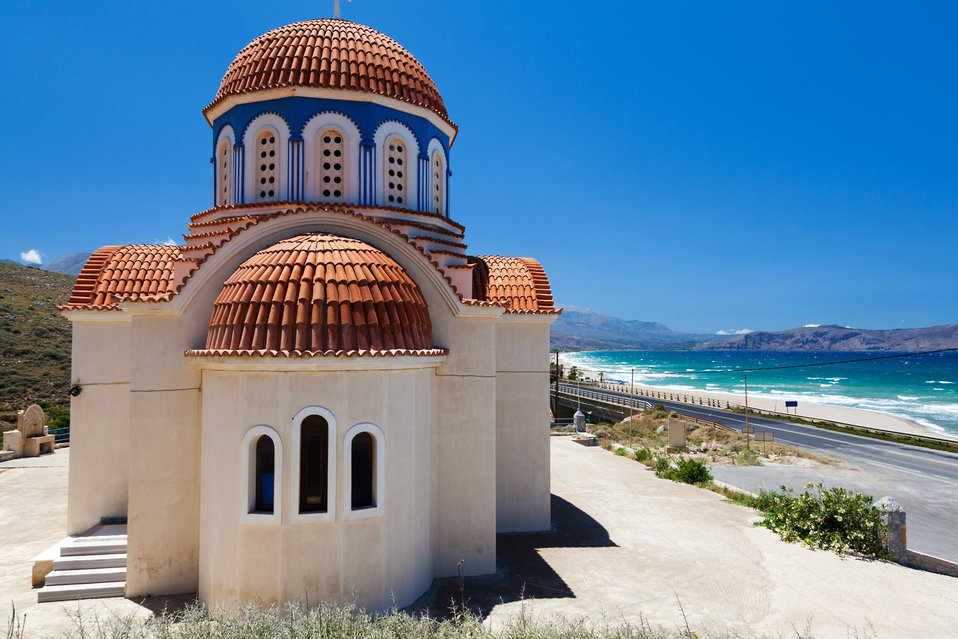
Orthodox church in crete.